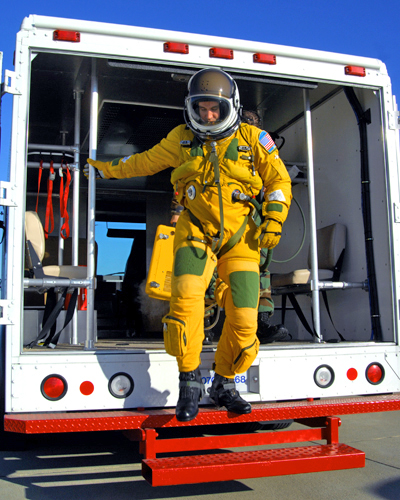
U-2 Dragon Lady

A U-2 Dragon Lady prepares for take-off before a high-flight. The U-2 is capable of flying at altitudes up to 70,000 feet.